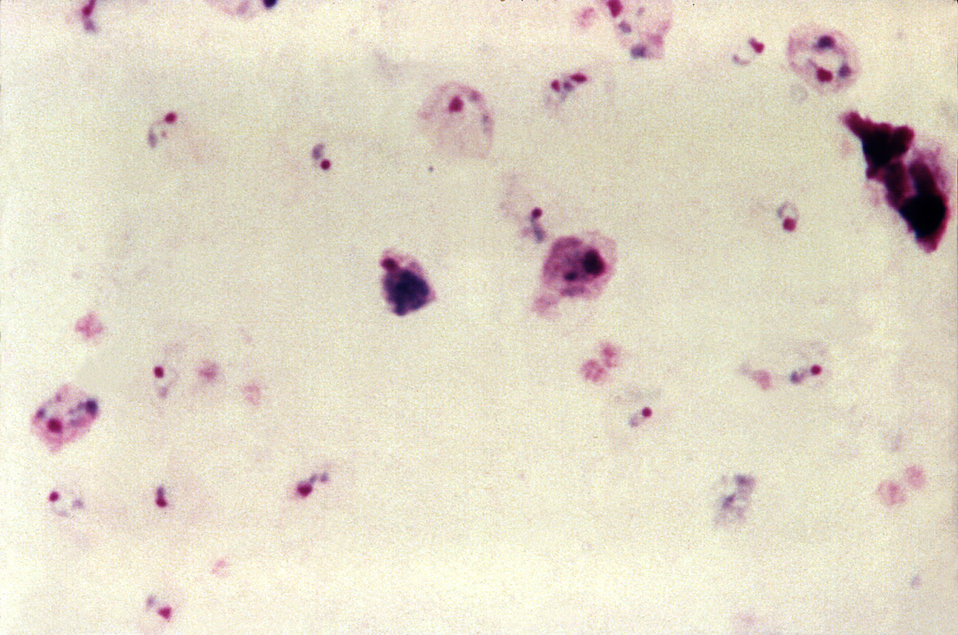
This thick film Giemsa stained micrograph reveals a mature Plasmodium vivax trophozoite, and gametocyte.